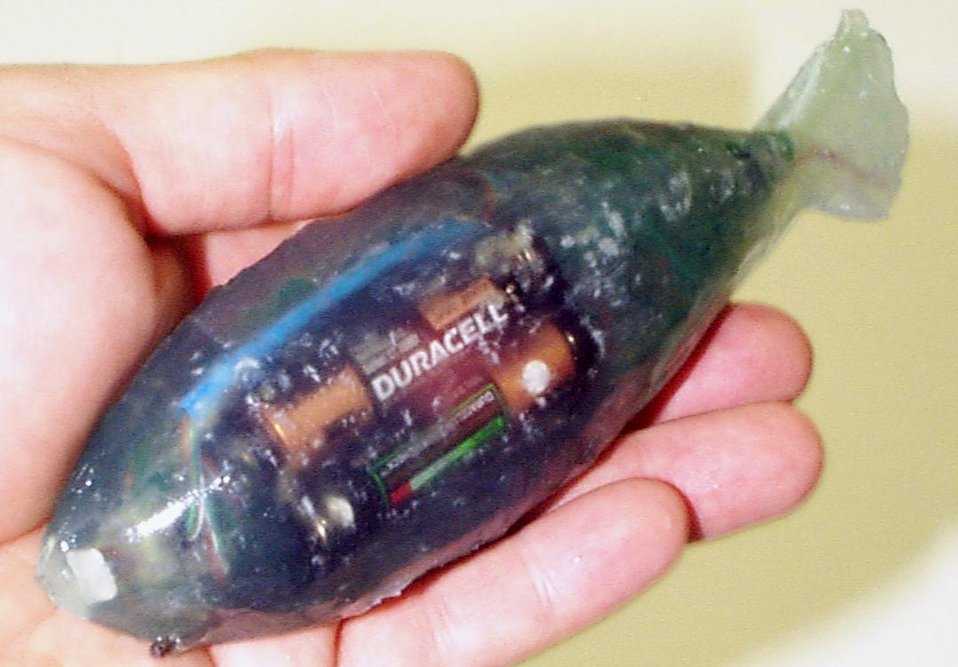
PNNL DEVELOPED ELECTRONIC SENSOR FISH THAT RECORDS ENVIRONMENTAL CONDITIONS.

THE ELECTRONIC SENSOR FISH DEVELOPED BY PACIFIC NORTHWEST NATIONAL LABORATORY SCIENTISTS IS DESIGNED TO RECORD SOME OF THE ENVIRONMENTAL CONDITIONS THAT FISH MAY ENCOUNTER WHILE PASS THROUGH HYDROPOWER TURBINES. THE MARINE SCIENCES LABORATORY CONDUCTS STUDIES IN ECO-TOXICOLOGY, ANALYTICAL CHEMISTRY, WETLAND AND COASTAL ECOLOGY, FISHERIES, OCEAN PROCESSES, INSTRUMENTATION, REMOTE SENSING, RISK ASSESSMENT AND BIOTECHNOLOGY REMEDIATION.